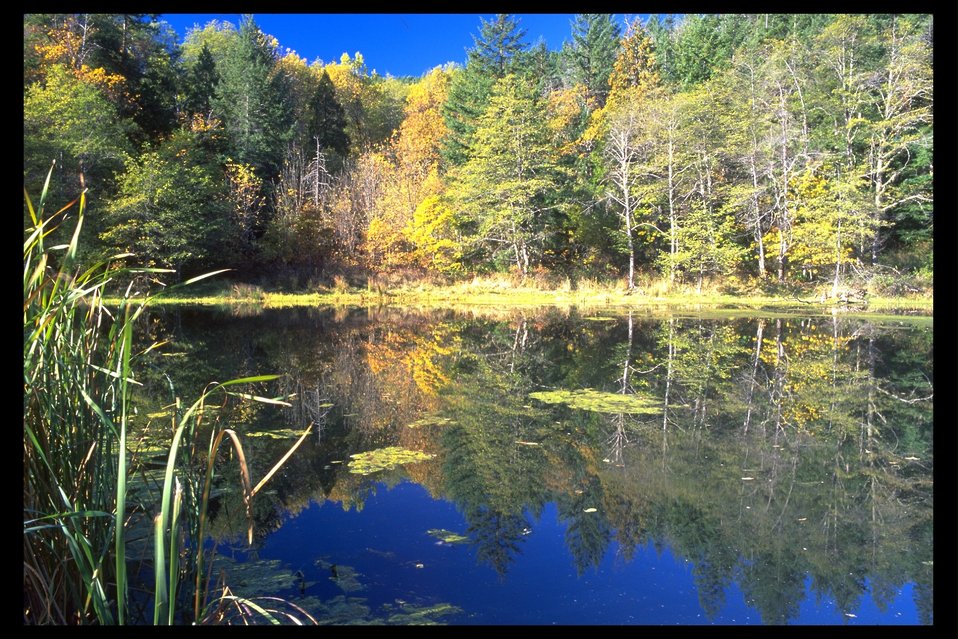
Pond near Elk Creek.